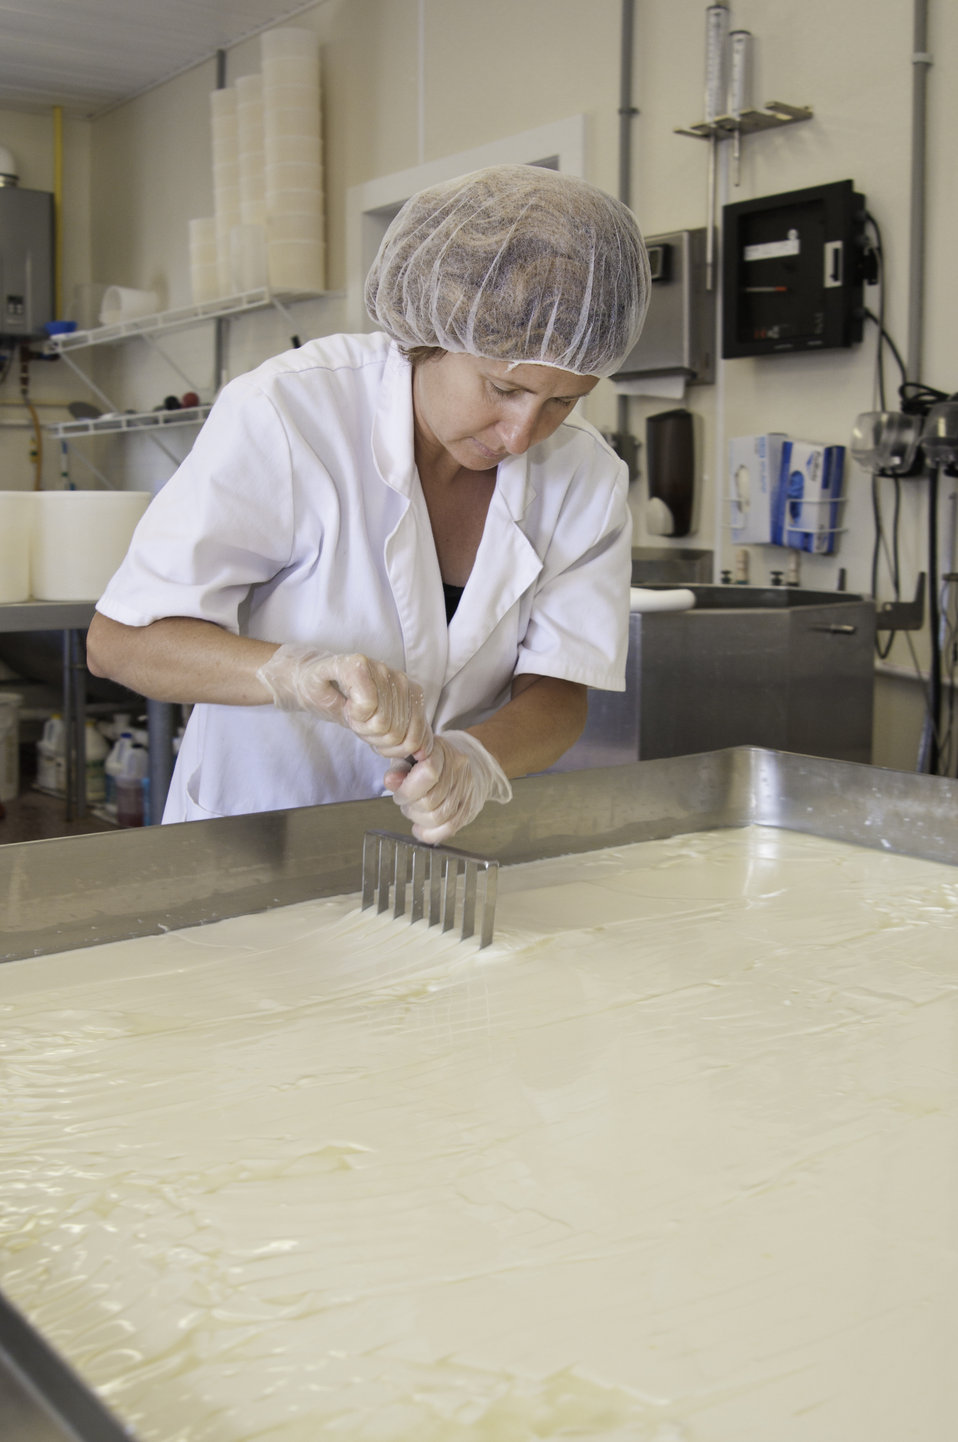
Chapel’s Country Creamery owner Holly Foster in Easton, MD cuts the milk curd with a curd knife in small cubes. Timing is everything in this step. Then the curds are cooked and stirred in the whey that was expelled in the cutting process. The dairy uses fresh raw milk 12-24 hours old. The milk is all-natural and contains no synthetic hormones, antibiotics, or chemical compounds. The 1150 pounds of milk in the vat will be used to make the dairy’s “Bay Blue” Cheese.